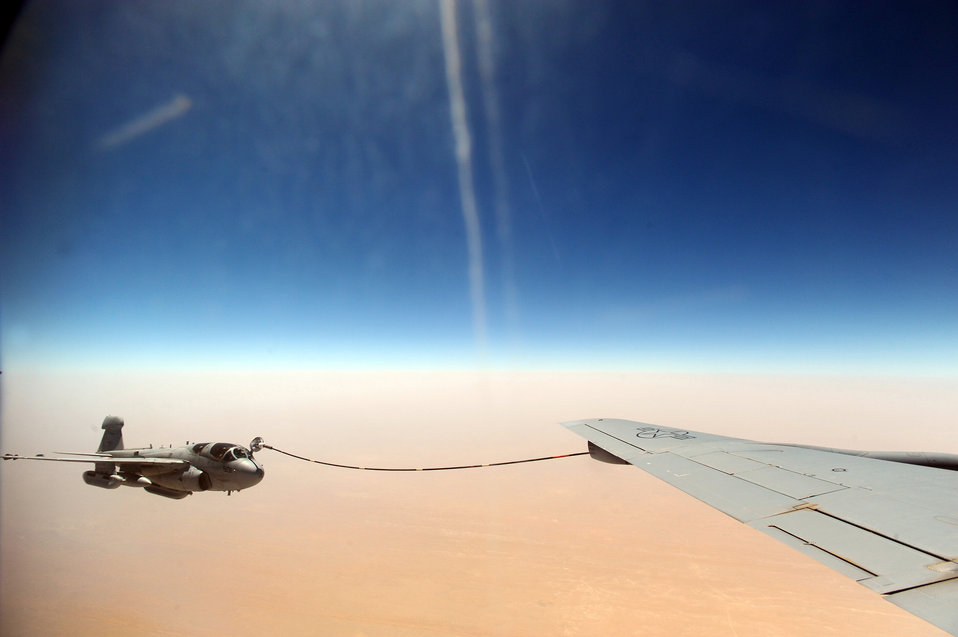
Refueling the fight

A Navy EA-6B Prowler links up to be refueled by a KC-135 Stratotanker May 8, 2011, above Afghanistan.